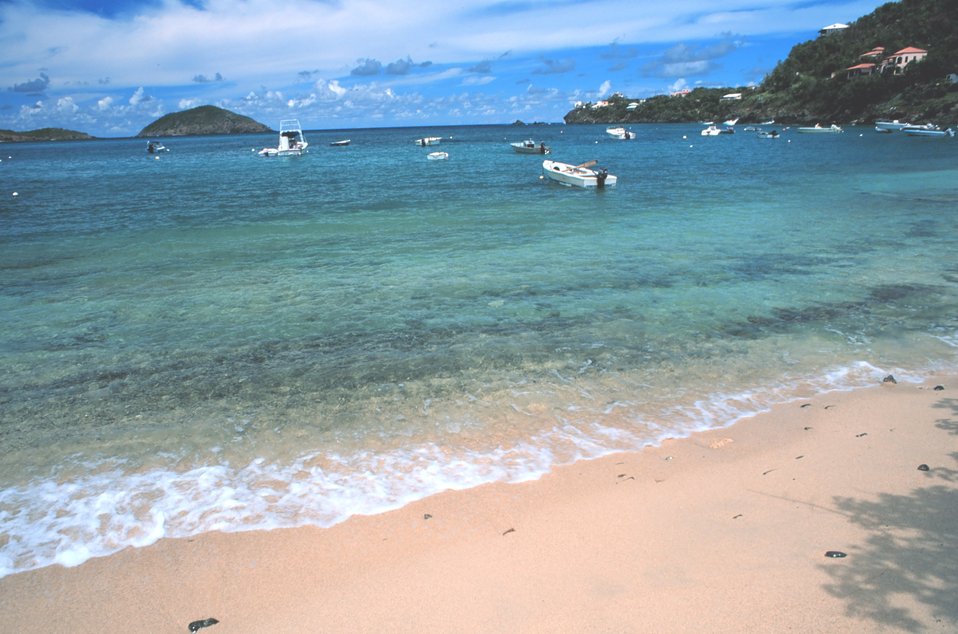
Fishing and pleasure boats at Hull Bay